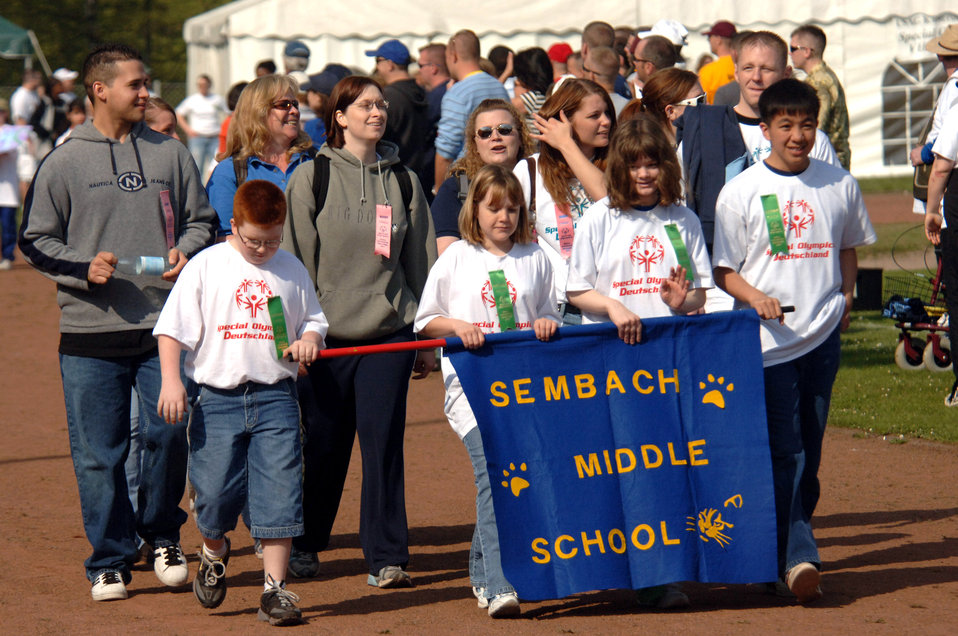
Volunteer spirit at Special Olympics

Students from Sembach Middle School participate in the Special Olympics opening ceremonies at Enkenbach-Alsenborn, Germany, on Wednesday, May 3, 2006. This is the 29th time the games were held in this part of Germany. Volunteers usually outnumber the athletes.